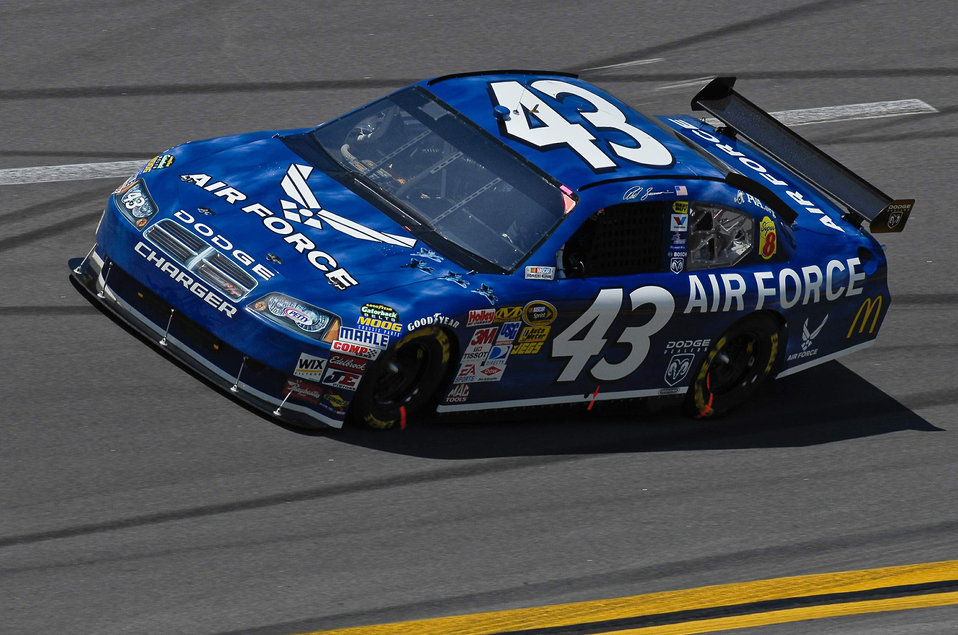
Switching Seats campaign going strong

The No. 43 Air Force-sponsored NASCAR driven by Reed Sorenson makes its way around the track during the Aaron's 499 race April 26 at Talladega Superspeedway in Talladega, Ala. This was the first race for the No. 43 Richard Petty Motor Sports car featuring the Air Force primary paint scheme. The car started 41st but finished 11th in the race.